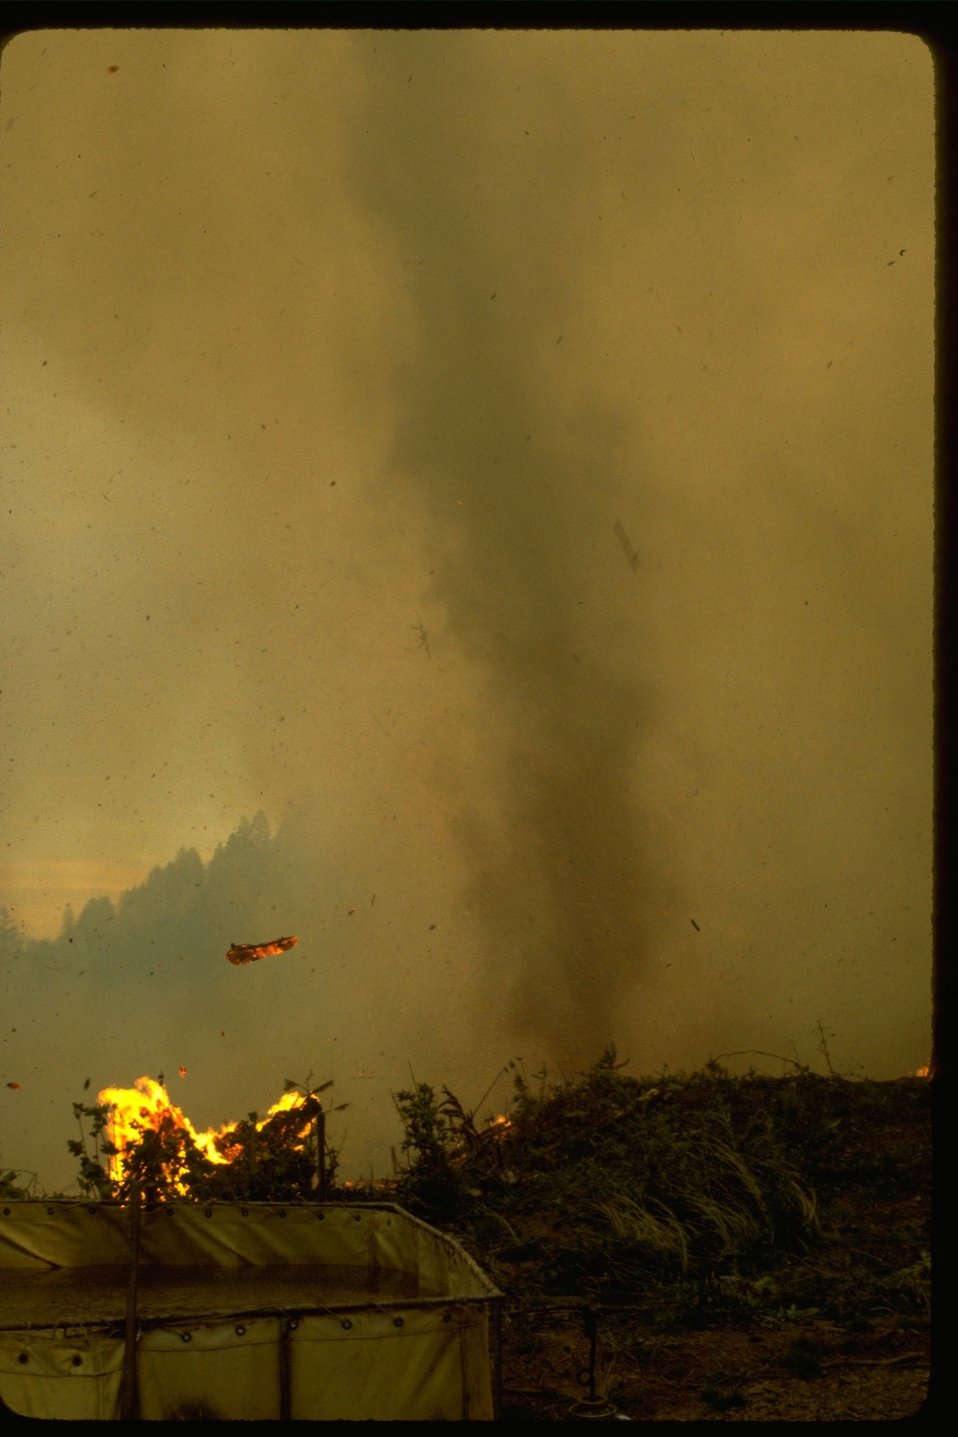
Forest Fire.